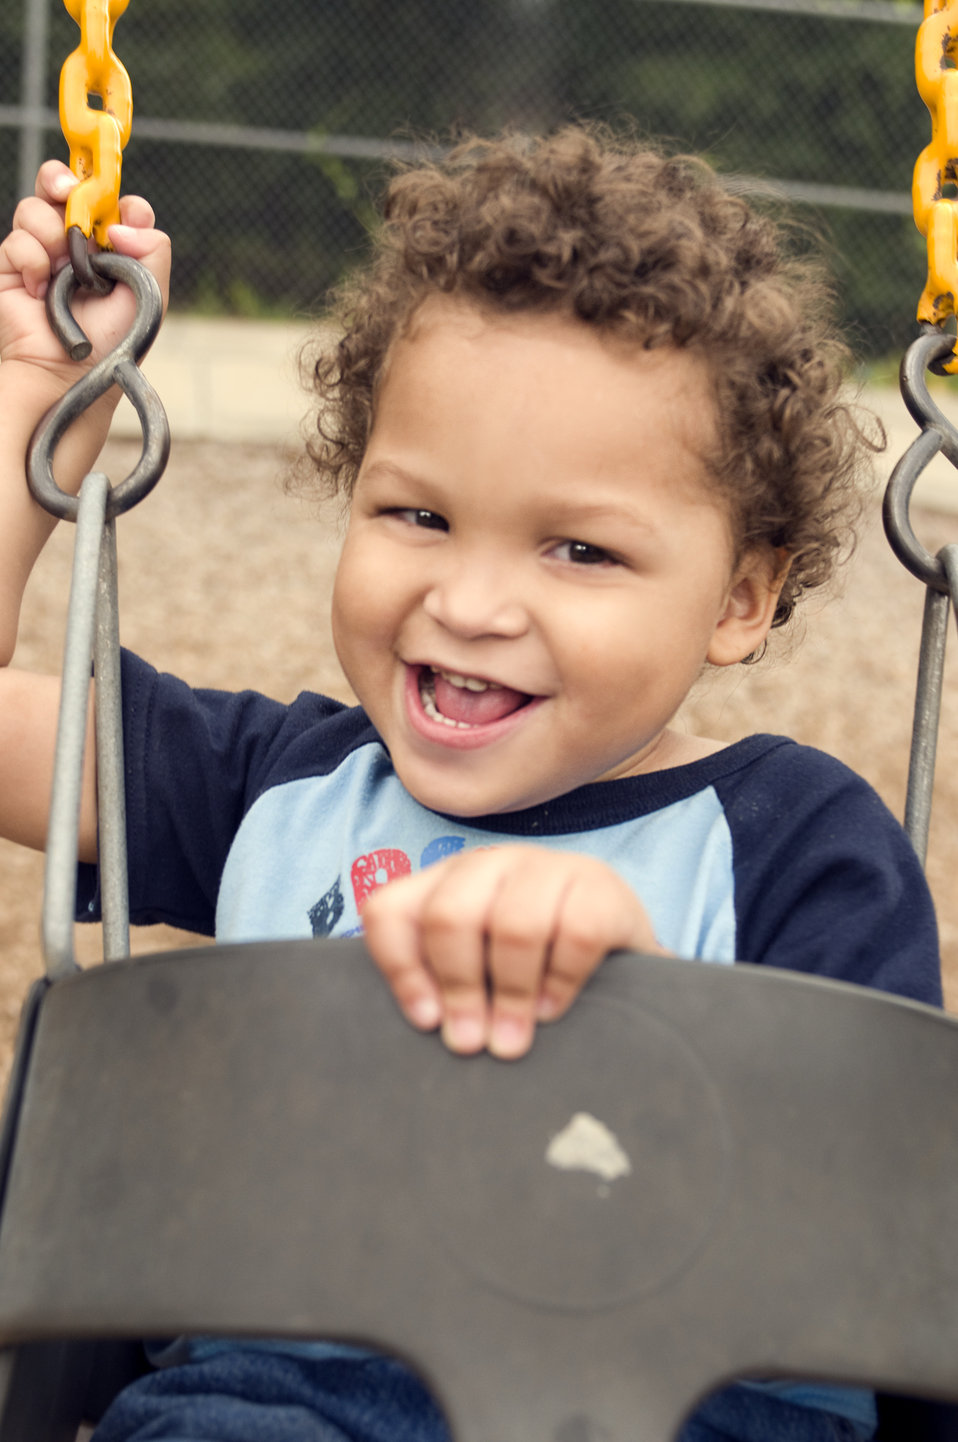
Securely seated in a swing seat, this smiling young boy was having fun with his mother at a community playground. He was wearing a darkly-colored t-shirt, and his sun-exposed skin was protected by a covering of previously-applied sunscreen.